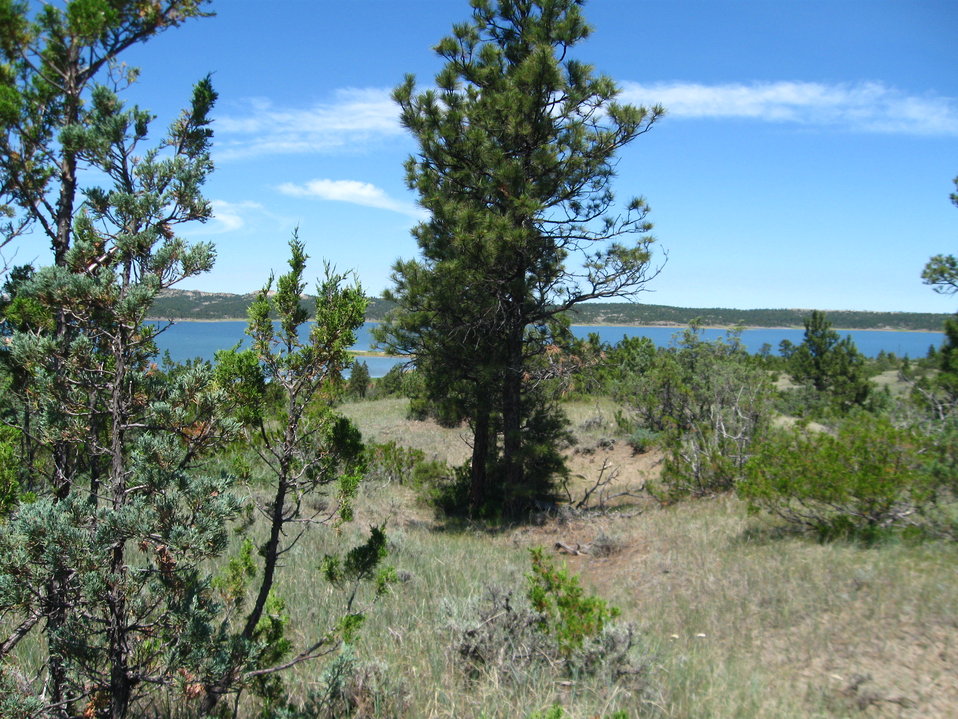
Fort Peck Lake

View of Fort Peck Lake from the north side of Charles M. Russell National Wildlife Refuge.